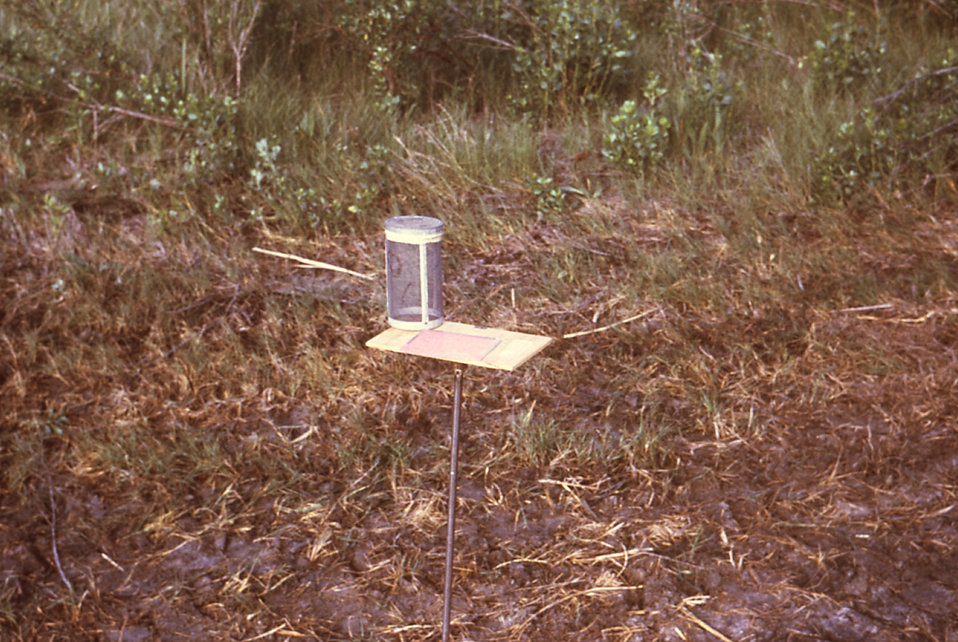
This 1981 photograph depicts the placement of a bioassay cage, along with an attached dye card, and a silicone coated slide inside the geographic parameter of a bioassay insecticide study.